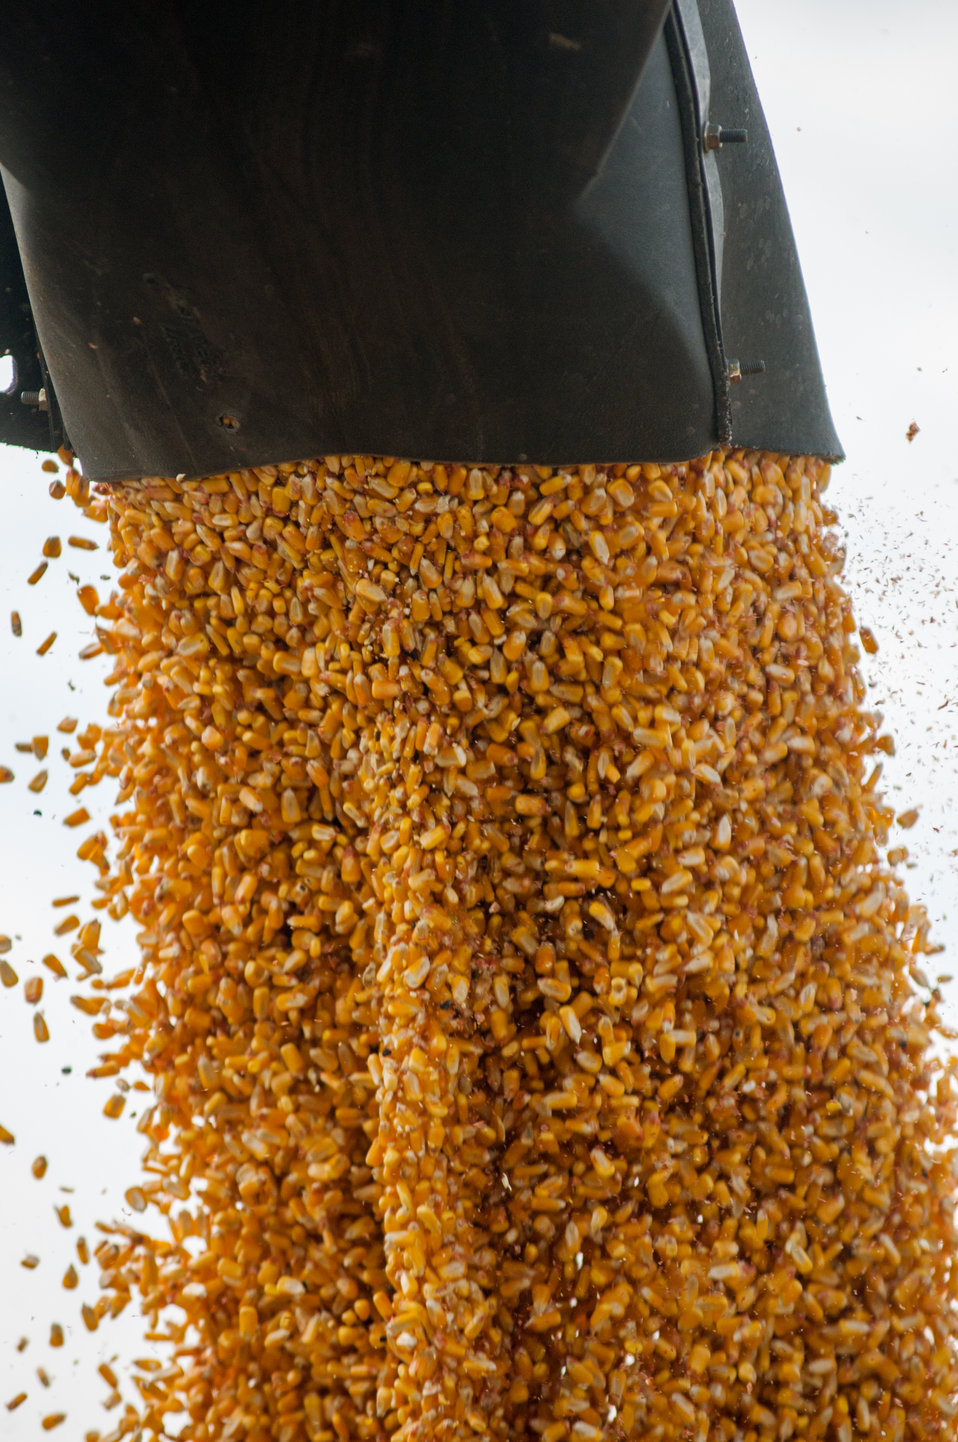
Corn is transferred from corn harvester to trailer, at the John N. Mills & Sons farm; a family owned business located in the Hanover and King William Counties Virginia, on Friday, Sept. 20, 2013. Pleasant Level Farm was the original farm from a Land Grant from King George III of England to Nicholas Mills in 1725. The original acreage has never left the Mills family name and continues to be farmed by the family.
Now the farm covers 5,744 acres that produce corn, wheat, soybeans, barley, hay, timber, and pastures a large herd of beef cattle. They have been using conservation and stewardship practices since the 1960s. Some of the efficient practices include no-till planting and cover crops to reduce soil erosion and prevent the leaching of nutrients into ground water, as well as livestock stream exclusion. The farm has several conservation easements that aids in the preservation and restoration of wetlands and waterways. For information about the U.S. Department of Agriculture (USDA), please go to www.usda.gov.